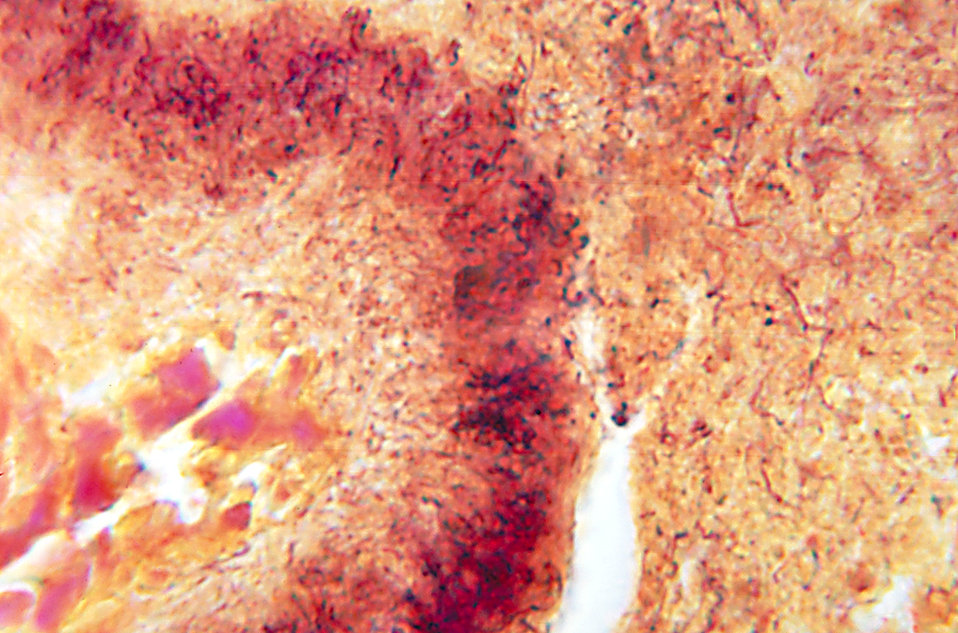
This is the histopathologic appearance of an actinomycetic mycetomatous granule using a Brown and Brenn stain.